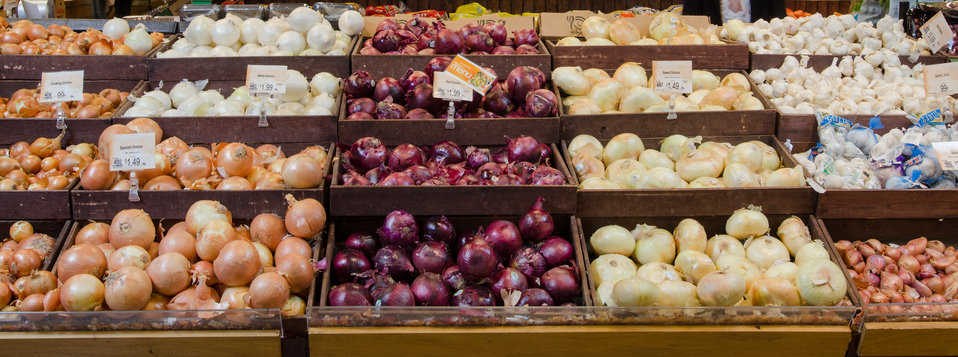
Onion and garlic produce at a grocery store in Fairfax, Virginia, on March 3, 2011.